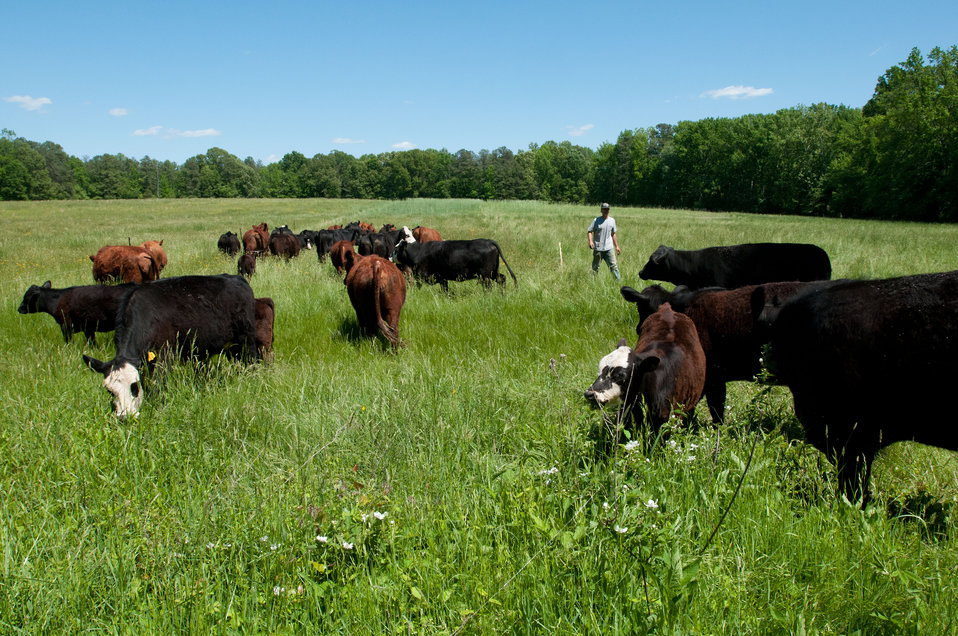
Daniel Thompson calls out 'Hey Cow' to get the cattle to move on into a fresh pasture for them to graze at the Tuckahoe Plantation, in Goochland County, VA on Thursday, May 5, 2011. His family has owned the plantation since 1935. They are the fourth family to own the plantation, the boyhood home of President Thomas Jefferson from 1745 until 1752, today it is a working farm with cattle, sheep, chickens and rabbits supplying meats to Fall Line Farms a local food hub. Fall Line Farms offers a wide variety of household food staples and specialty items on an ever changing inventory of fruits, vegetables, meats, soaps, eggs, cheeses, flowers, honey, pastas, sauces, syrups, baked goods, mushrooms, flour and grains. Suppliers post what they have on a Lulus Local Food online listing and customers make their selection. Every Thursday, suppliers team up to deliver customized orders to, one of several pick-up points, designated by the customer in or around the Richmond, VA area.